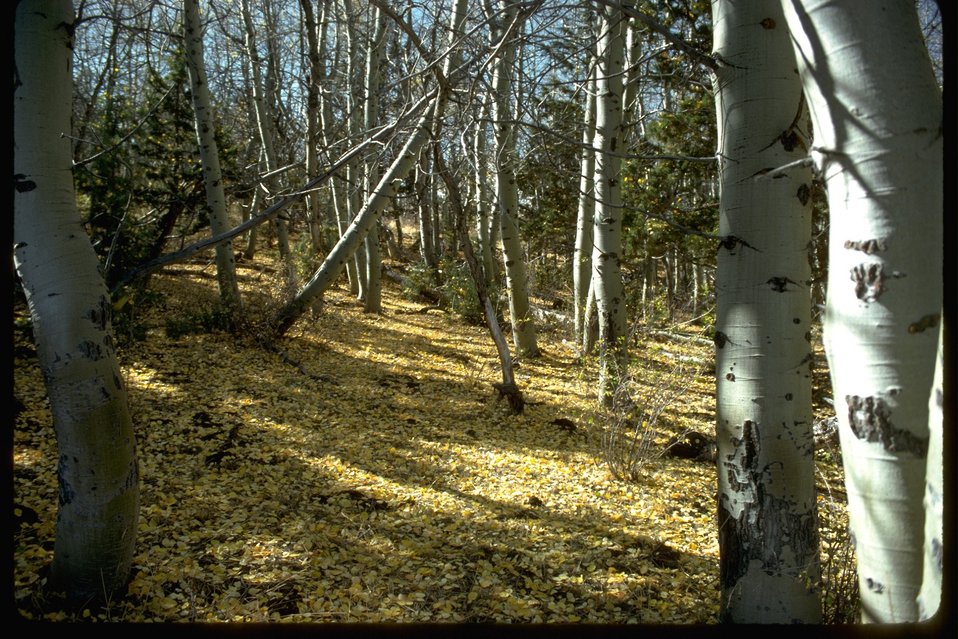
Floor of Aspen Forest at Steens Mountain.